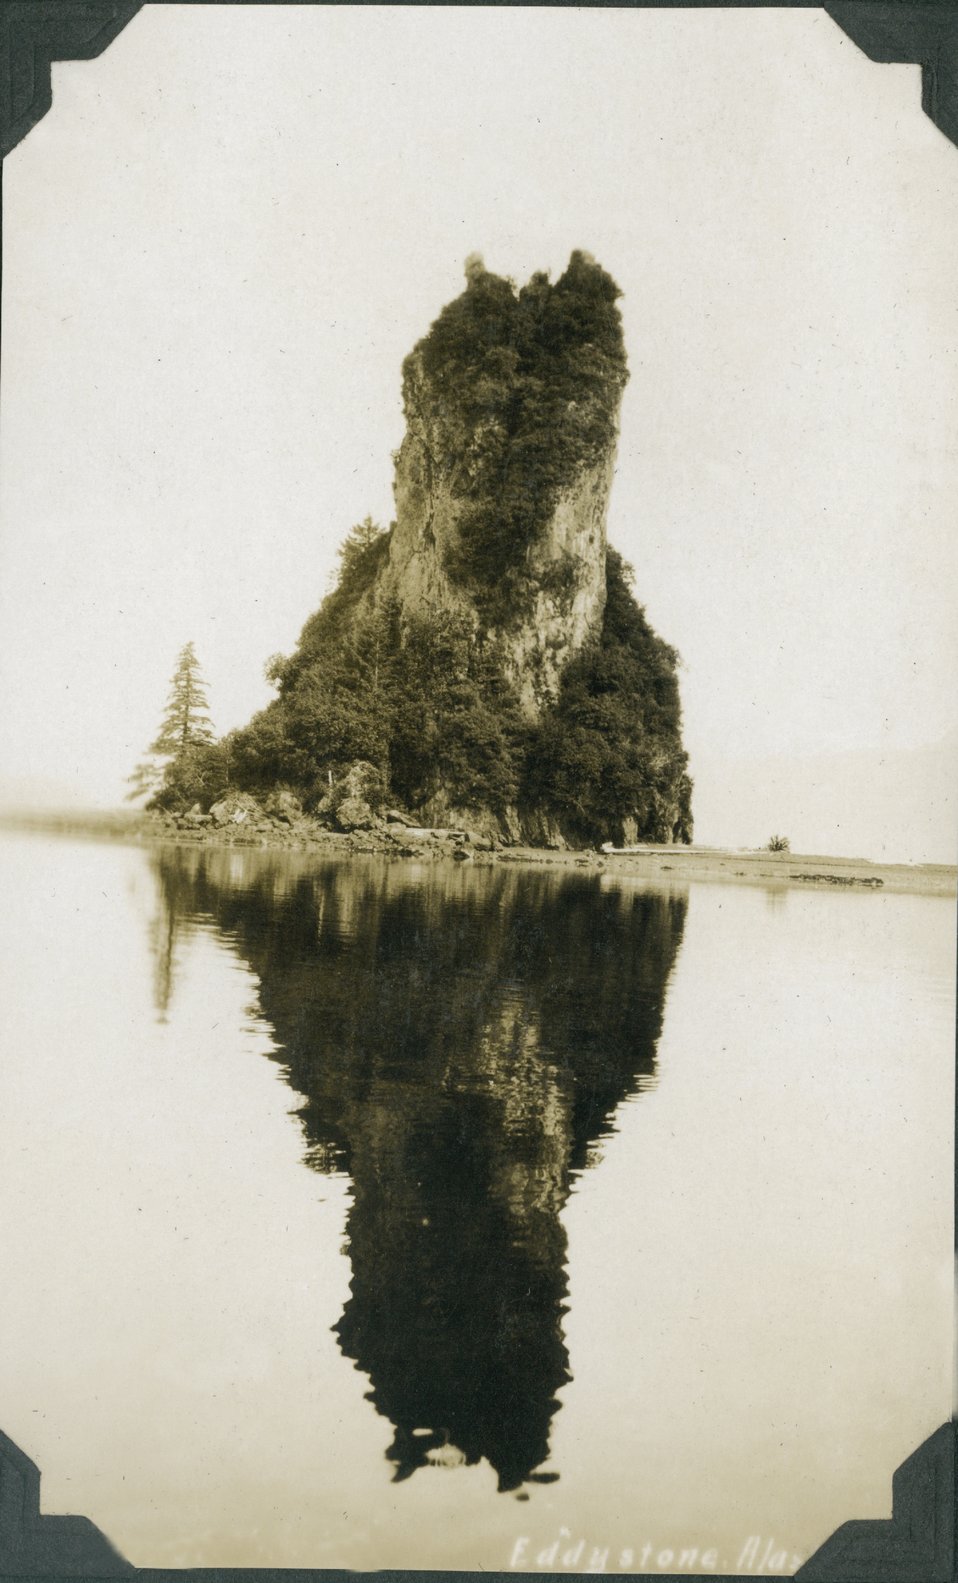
New Eddystone Rock, named for Eddystone Lighthouse.